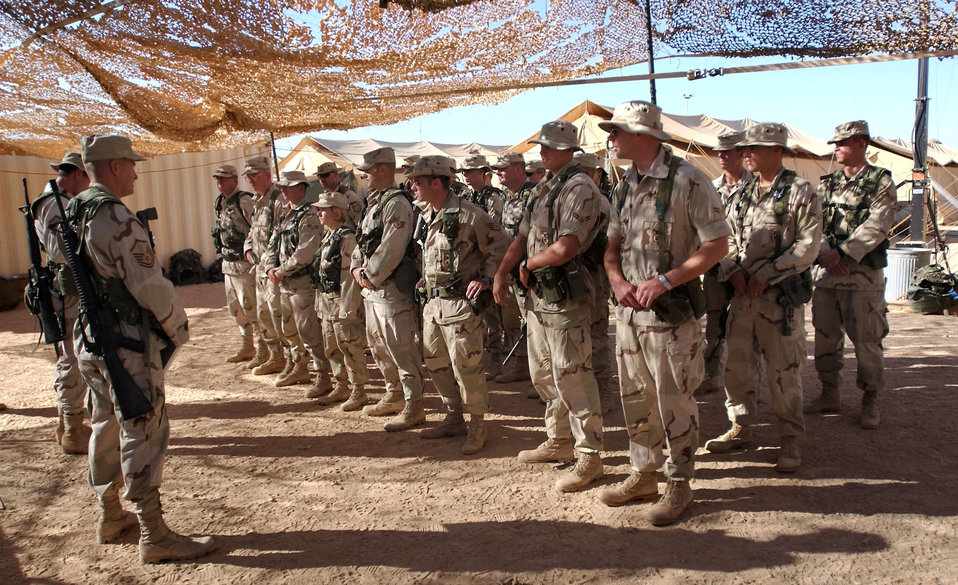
Guard mount

OPERATION ENDURING FREEDOM -- Air Force security forces from the 405th Air Expeditionary Wing listen to instruction during guard mount at an Operation Enduring Freedom location. A guard mount is conducted to brief security forces troops before a shift change.